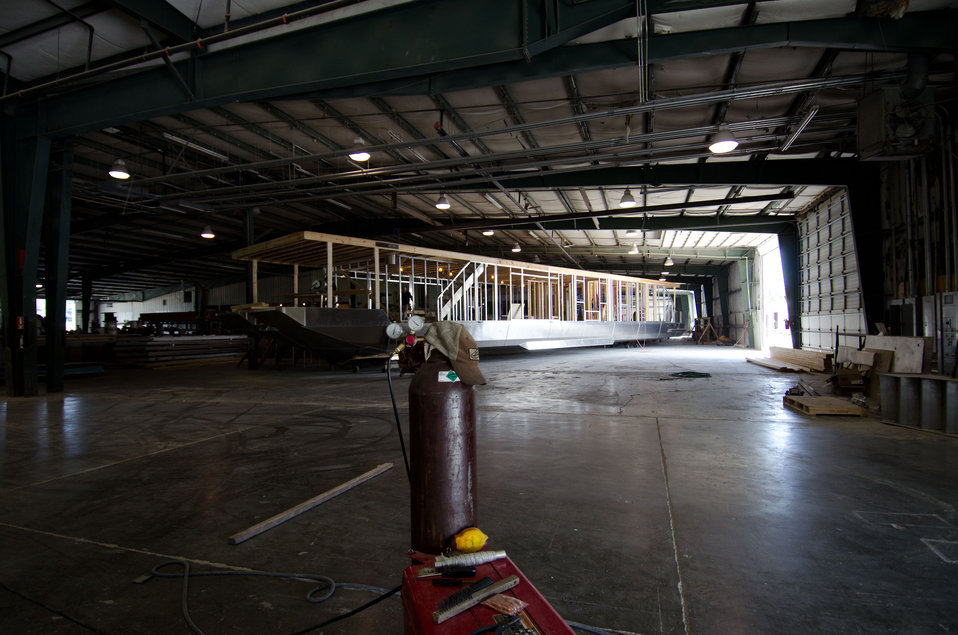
Stardust Industries is using it's expertise in luxury house boats to help retool and redirect Monticello, Kentucky’s houseboat manufacturing industry on Wednesday, July 13, 2011 The houseboat industry has been decimated because of the struggling economy – by using its facilities and manpower to create low-cost housing that is energy efficient. Rural Development obligated $499,000 in Rural Business Enterprise Grant funds to support this unique endeavor. Up until a few years ago, there were several successful houseboat manufacturers in the four-county area surrounding the city of Somerset. Most have now ceased operation or drastically reduced output, which has led to dramatic, long-term job loss. These new energy efficient homes will be constructed in redesigned, refitted houseboat factories using local workers that have been retrained.